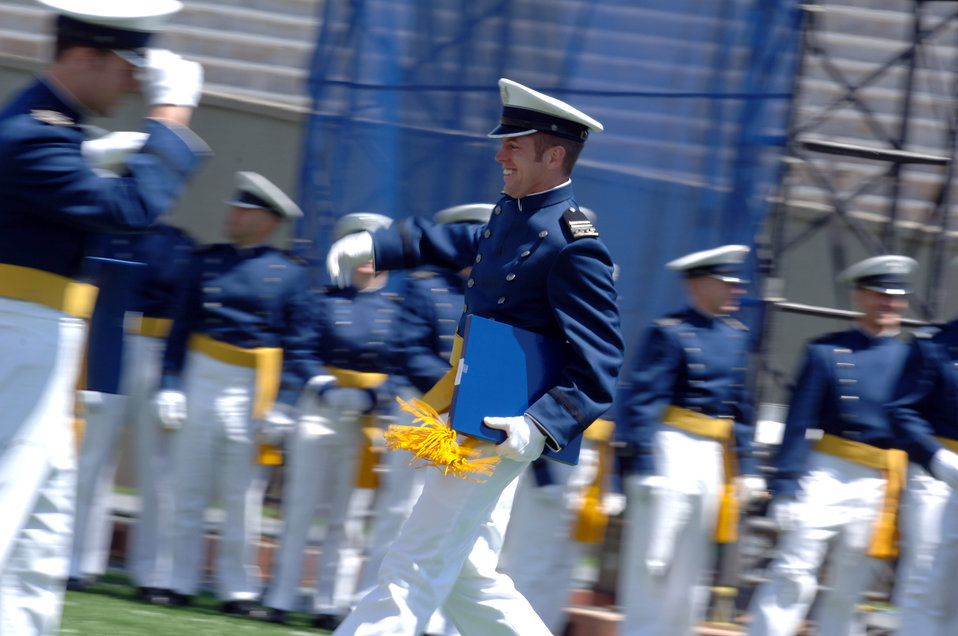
From cadet to lieutenant

One of the Air Force's newest second lieutenants returns a salute to one of his classmates following receipt of his degree from the U.S. Air Force Academy May 30 in Colorado. The ceremony in Falcon Stadium ends the cadet careers and begins the Air Force careers of 977 new lieutenants.